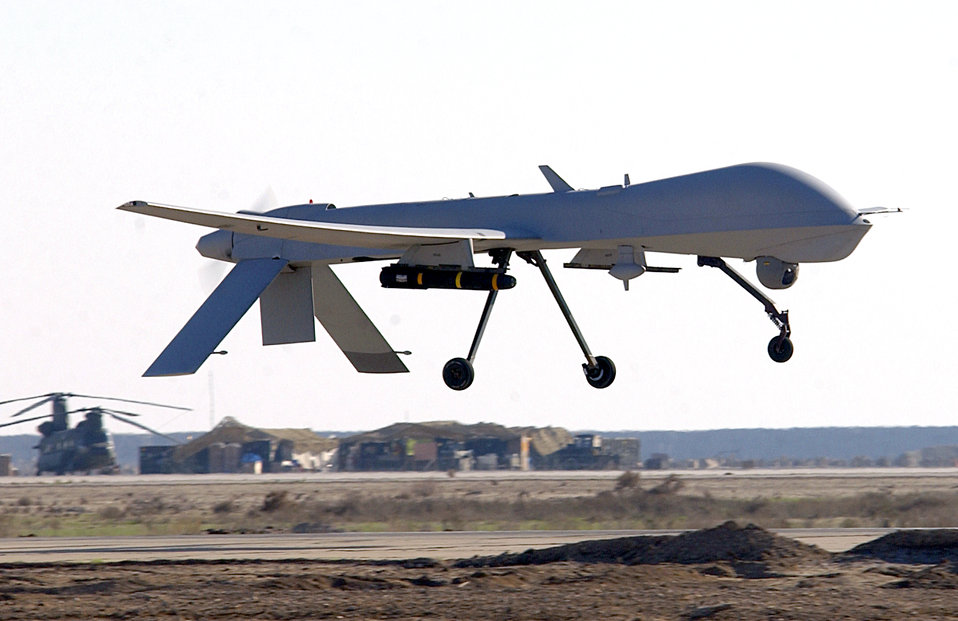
Predator accident report released

An MQ-1 Predator unmanned aerial vehicle from the 46th Expeditionary Reconnaissance Squadron lands Jan. 20 at Tallil Air Base, Iraq. The Predator is a remotely piloted vehicle that provides real-time surveillance imagery supporting the war on terrorism.